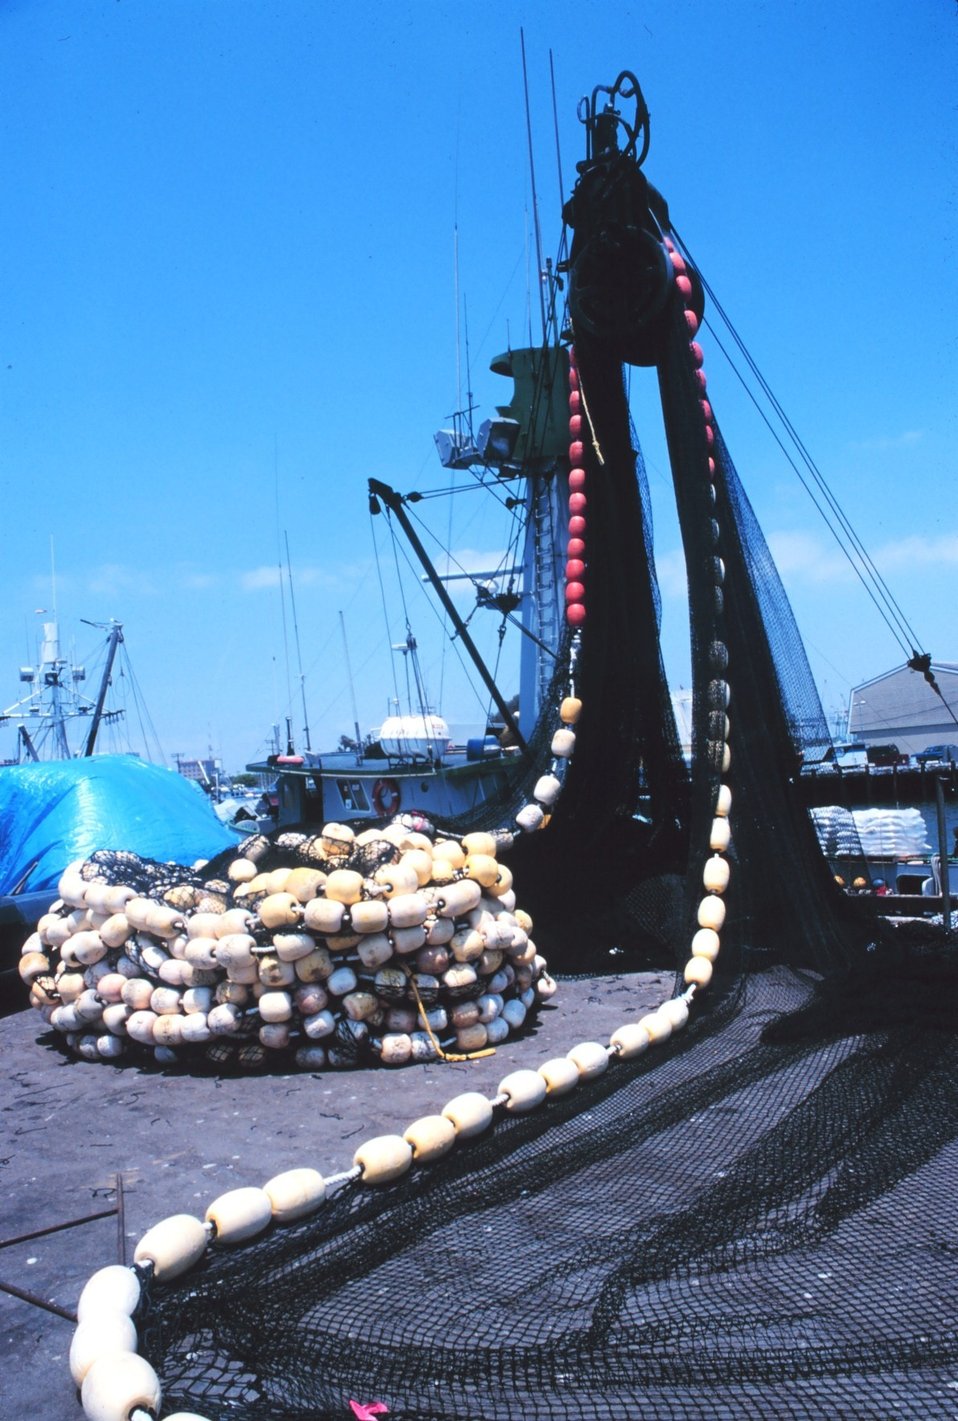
The paraphernalia of fishing on the pier - mountains of nets, floats, etc.